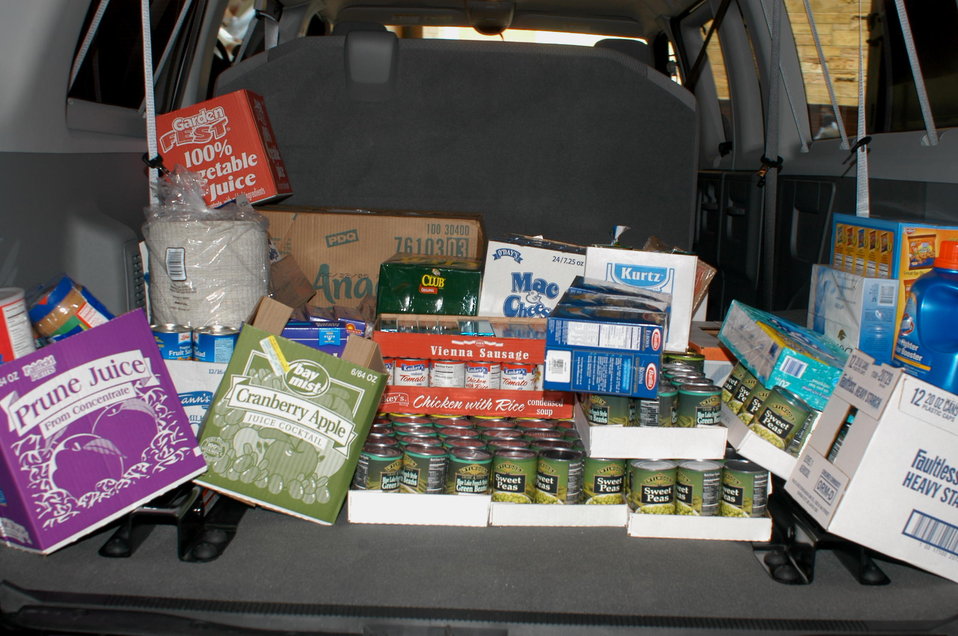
Sierra Exif JPEG